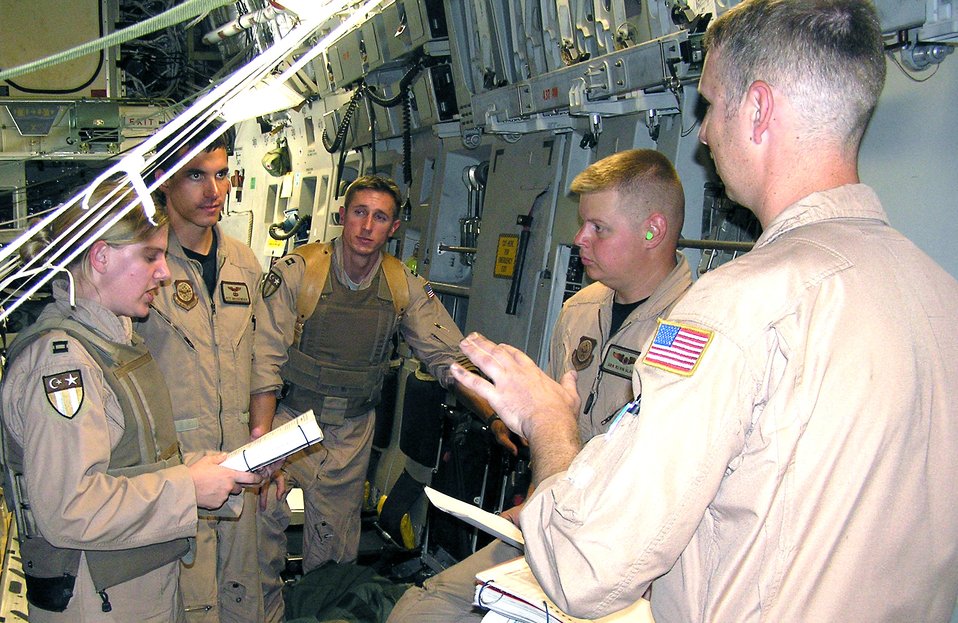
Manas C-17 drops vital cargo in Afghanistan

Capt. Jennie Steldt (left), aircraft commander, leads a mission update brief with her crew after 43,000 pounds of food, water, and building supplies were loaded and rigged for a combat airdrop in Afghanistan Sept. 17. The 817th Expeditionary Airlift Squadron, Detachment 1 crew is deployed from McChord Air Force Base, Wash. Other members of the crew pictured here are Captains Pete Grossenbach and Warren Halle, pilots, and Senior Airmen Kevin Slagle and Jeremiah Thompson, loadmasters.